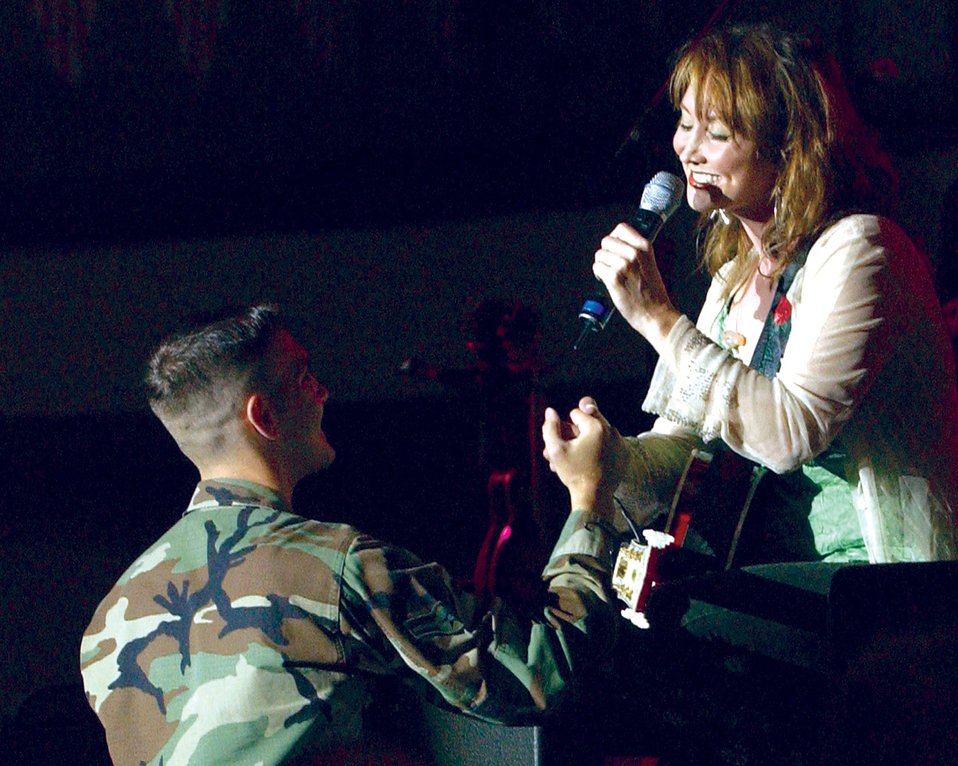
Pam Tillis Concert

HOLLOMAN AIR FORCE BASE, N.M. -- Country music singer Pam Tillis sings to Airman 1st Class Brandon McDonald during a free concert here July 18. The concert is part of the Spirit of America Tour.